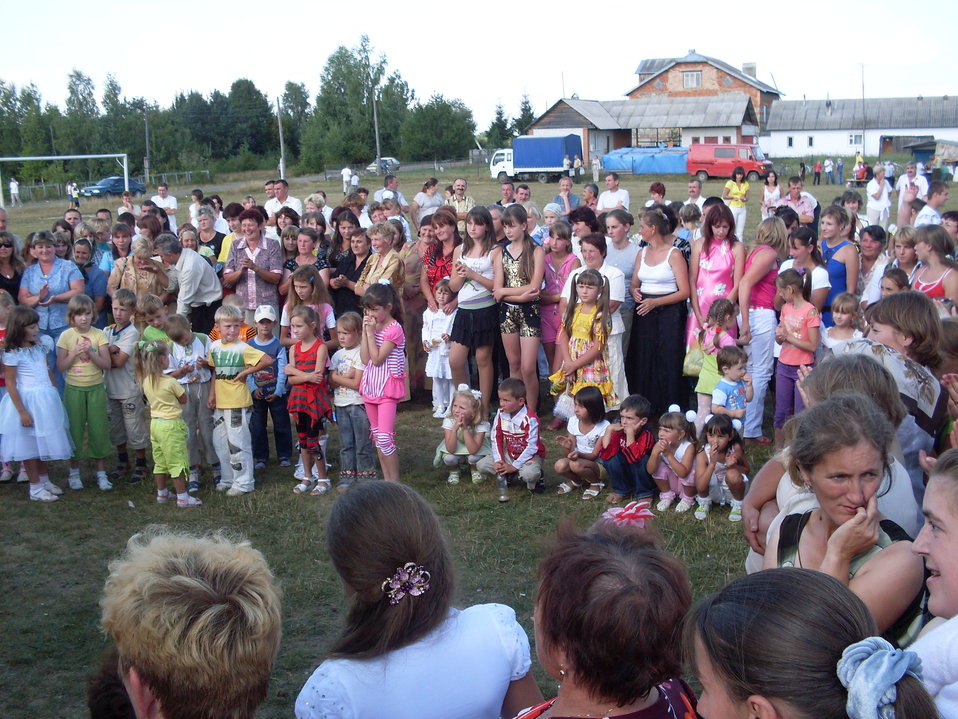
Українська: Lдень села 189.jpg: святкування Дня села у селі Вільхівка на Рожнятинщині (Івано-Франківська область)